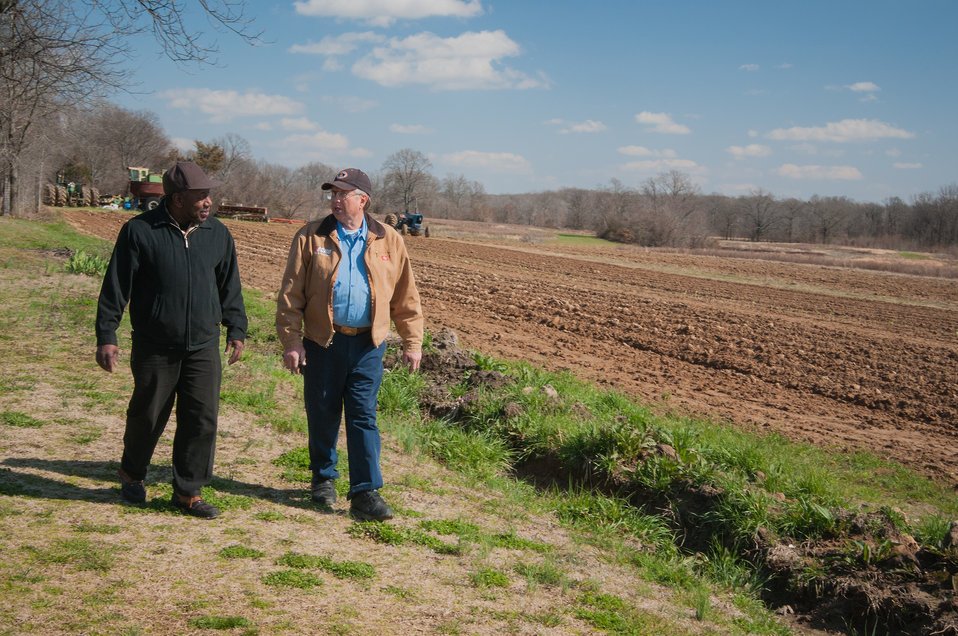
U.S. Department of Agriculture’s (USDA) Arkansas Strike Team Leader Charlie Williams and farmer Bill Hess discuss this year’s crop production on Mar. 5, 2013. Hess was able to secure a USDA Farm Services Agency (FSA) Conservation Reserve Program (CRP) loan that enabled Hess to process his purple hull peas. The University of Arkansas Pine Bluff, Agriculture Demonstration Outreach Center in Marianna, AR provided technical assistance to Hess for crop production, management, harvesting, food security, value added products and marketing options.